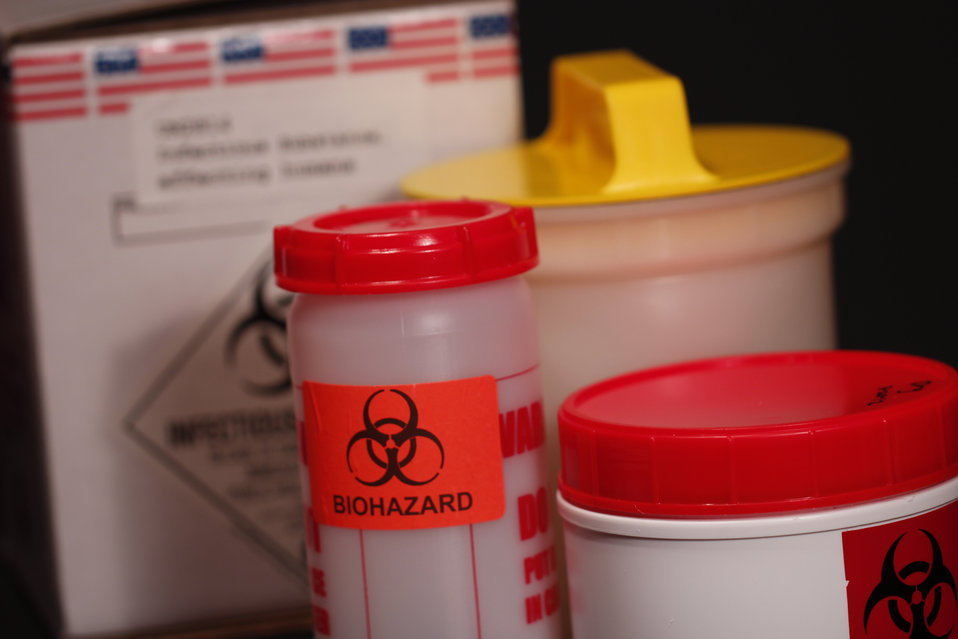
This photograph demonstrates three cylindrical-shaped containers, which are used in the shipment of biohazardous materials. In the background, you can see what is known as a UN/4G/Class 6.2 box, which is used to contain the largest of these three cylinders immediately adjacent to the box. In addition, note the diamond-shaped label on the box, which is a typical biohazard shipping label that must be placed on the outside of the box prior to shipping, stating that the package contains an infectious substance. Each of the two smaller containers in the foreground also display a bright orange biohazard label.